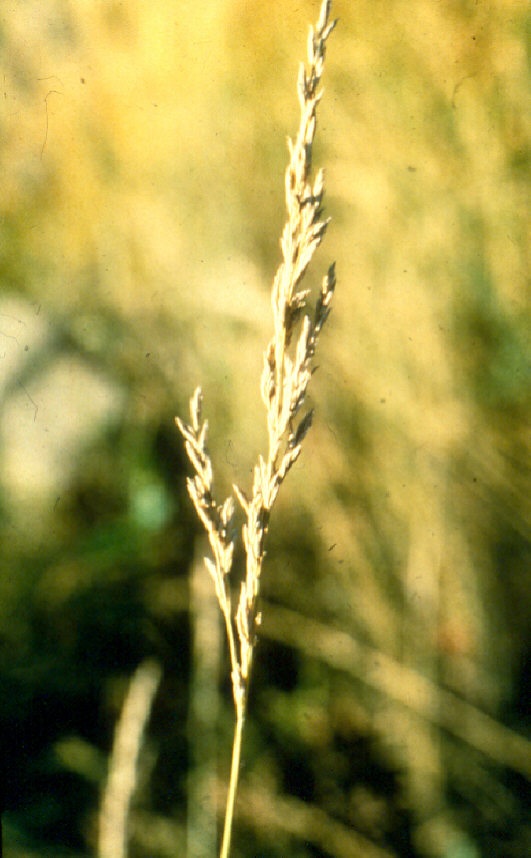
Poa Salmon FIeld Office UCSC Upper Columbia Salmon Clearwater District